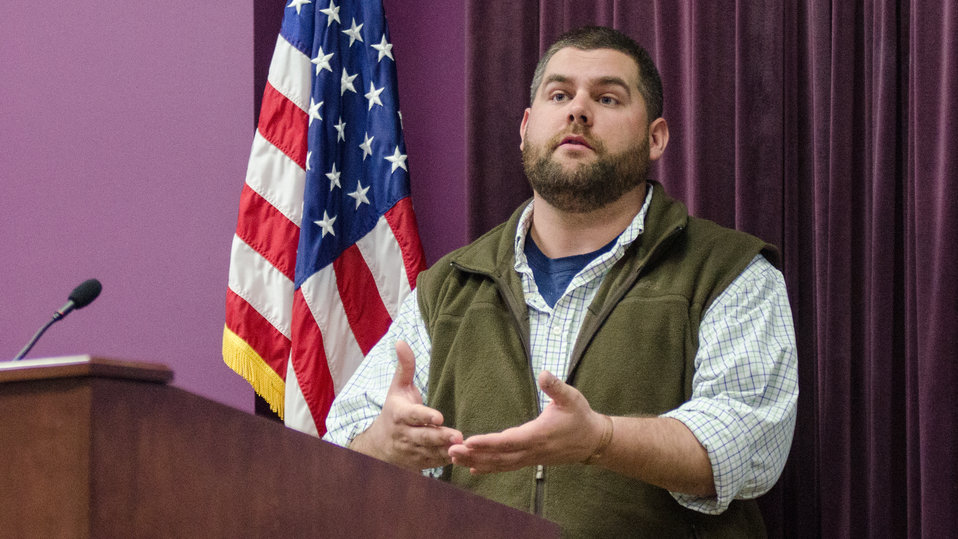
U.S. Department of Agriculture (USDA) Natural Resources Conservation Service (NRCS) Amelia County District Conservationist Derek Hancock talked with farmers about NRCS tools and information that may be of interest to them and how to reach NRCS people that support their area, during the “Virginia State University (VSU), USDA and Virginia Farmers Working Together” outreach workshop in the VSU, L. Douglas Wilder building on Thursday, March 7, 2013, in Petersburg, VA. Farmers shared and learned new ways to do more with USDA services, and how to apply for programs that will help grow their business.